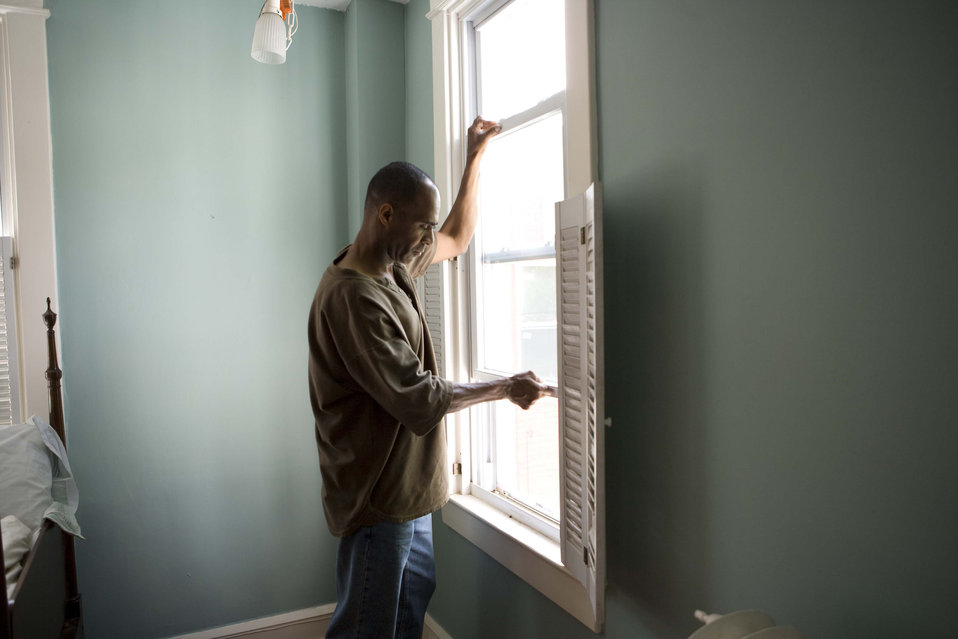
When renovating a home, you should use a damp sponge or cloth to clean dust collected on a window sill, as the dust may contain asbestos or lead-based paint. Home maintenance is an ongoing process for any homeowner, and here we see an African-American man as he was preparing a window in his home for a general cleaning.